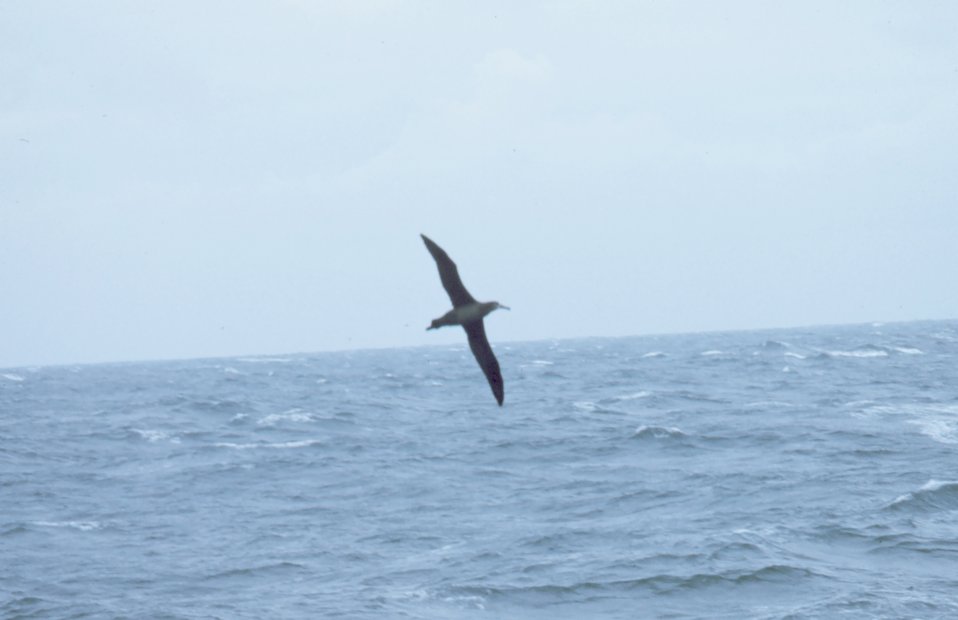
Albatross.